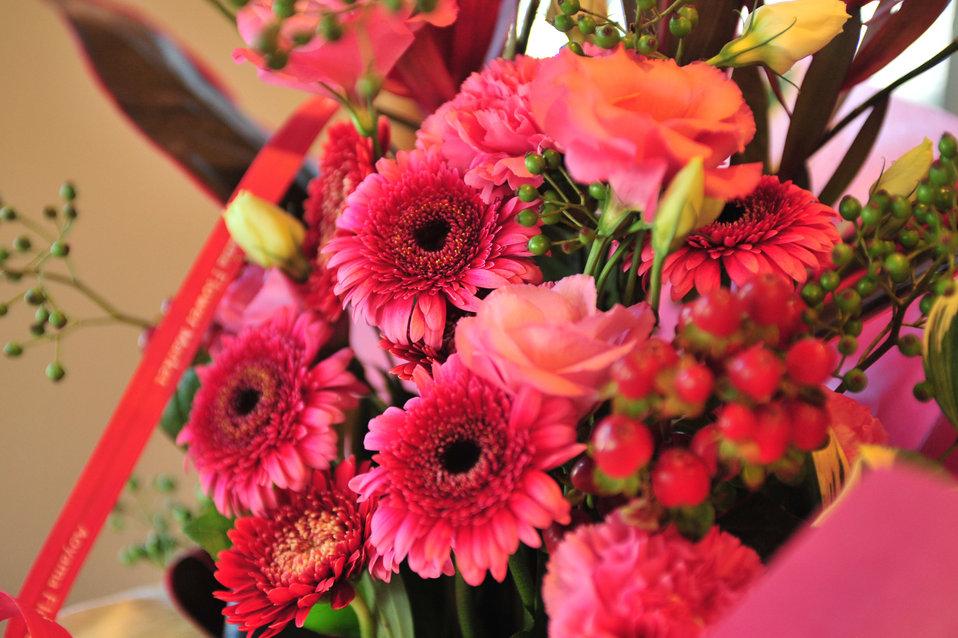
Flower of pink.